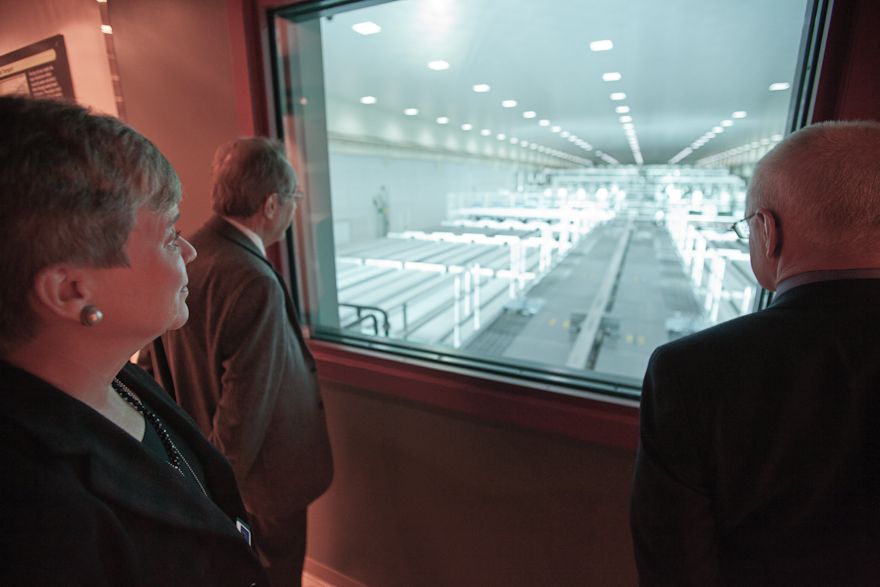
Acting Under Secretary Gottemoeller Visits the National Ignition Facility

Acting Under Secretary of State for Arms Control and International Security Rose, with former Secretary of Defense William Perry, left, and former Under Secretary of Defense for Policy Walter Slocombe Gottemoeller, right, tours the National Ignition Facility at the Lawrence Livermore National Laboratory in Livermore, California, on February 7, 2012. [Lawrence Livermore National Laboratory by Jacqueline McBride]